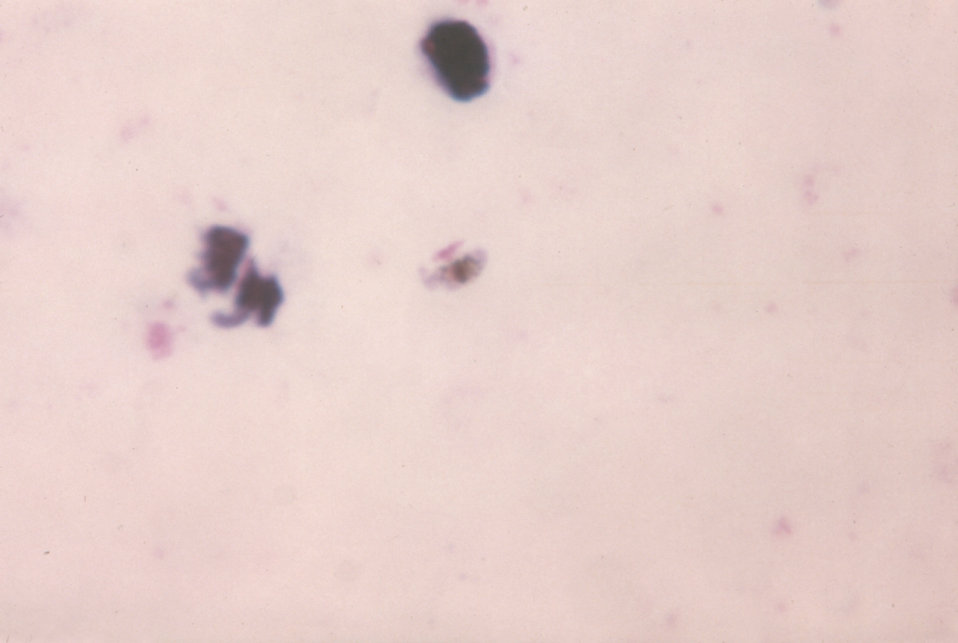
This photomicrograph of a thick blood smear reveals an elongated Plasmodium falciparum gametocyte.